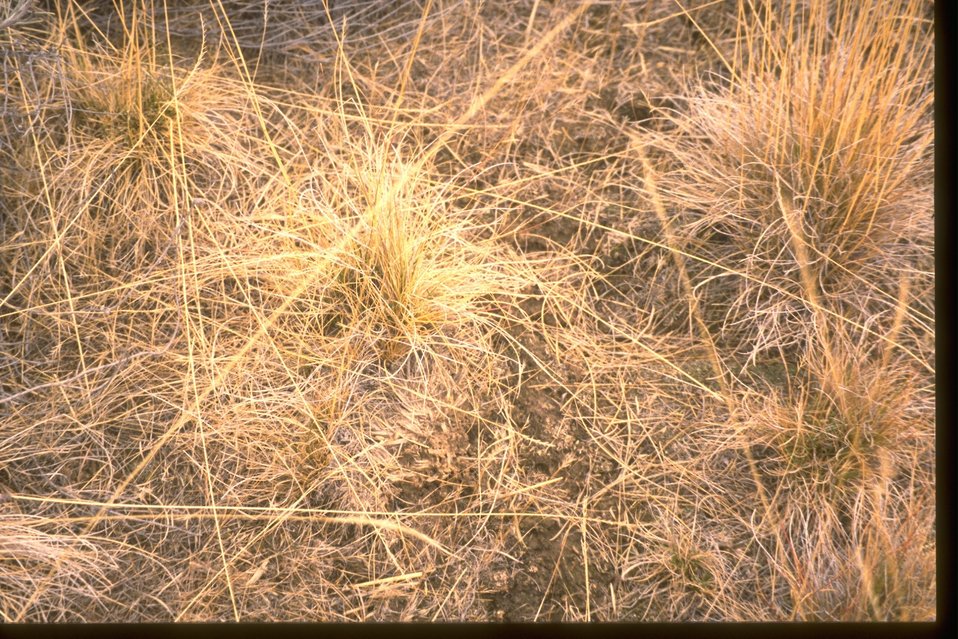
Close up of Idaho Fescue with little in central Oregon.